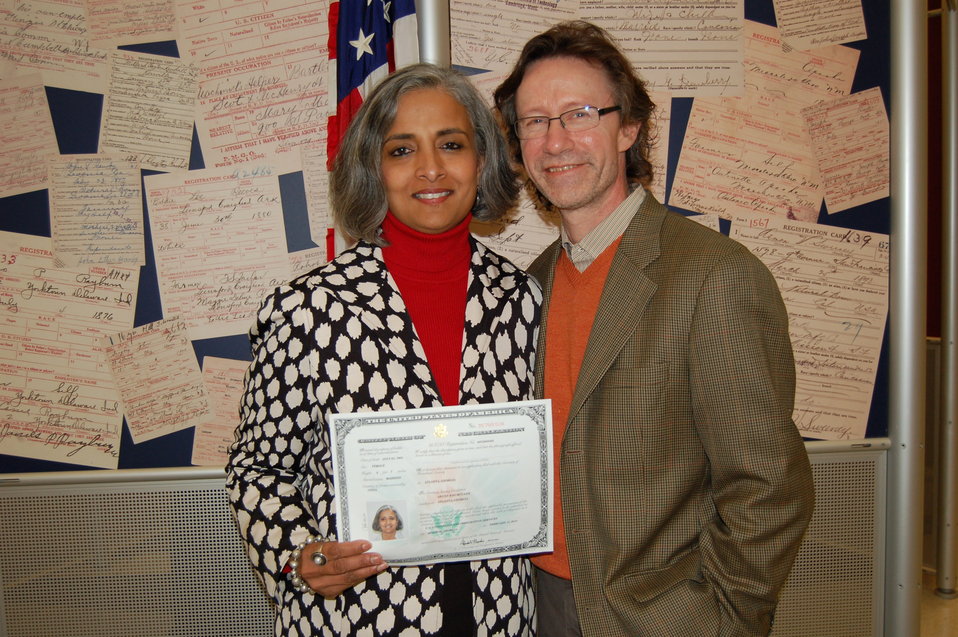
New Citizens